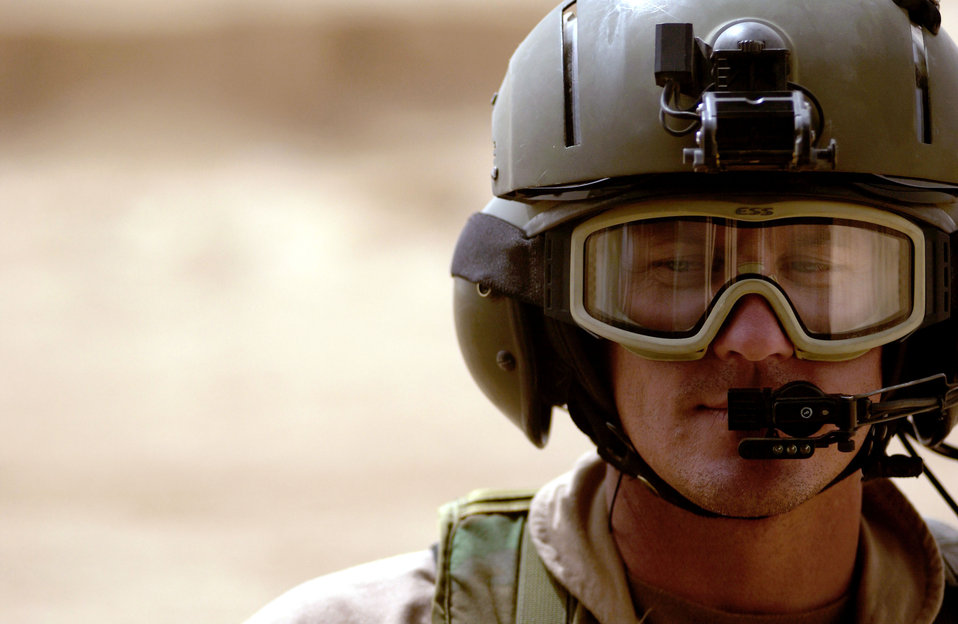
Communcation

OPERATION IRAQI FREEDOM -- A pararescuemen from the 301st Rescue Squadron talks with a member of the 101st Airborne Division April 6, at a forward deployed location in Iraq during Operation Iraqi Freedom.